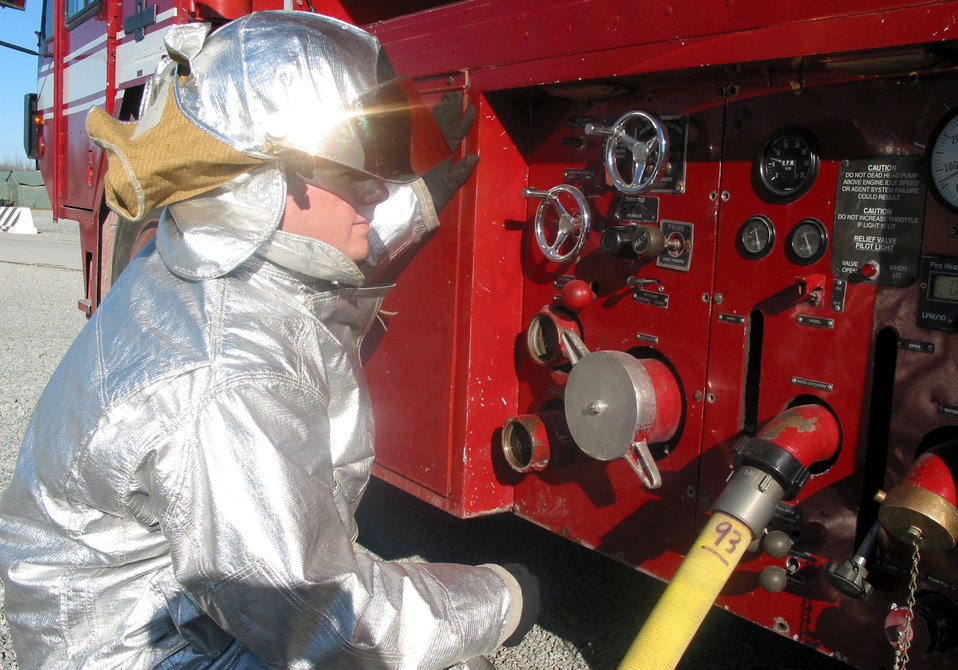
Firefighters keep flames at bay

MANAS AIR BASE, Kyrgyzstan -- Senior Airman James Panek monitors the water-pressure gauges on a fire truck here. Airman Panek is assigned to the 376th Expeditionary Civil Engineer Squadron.